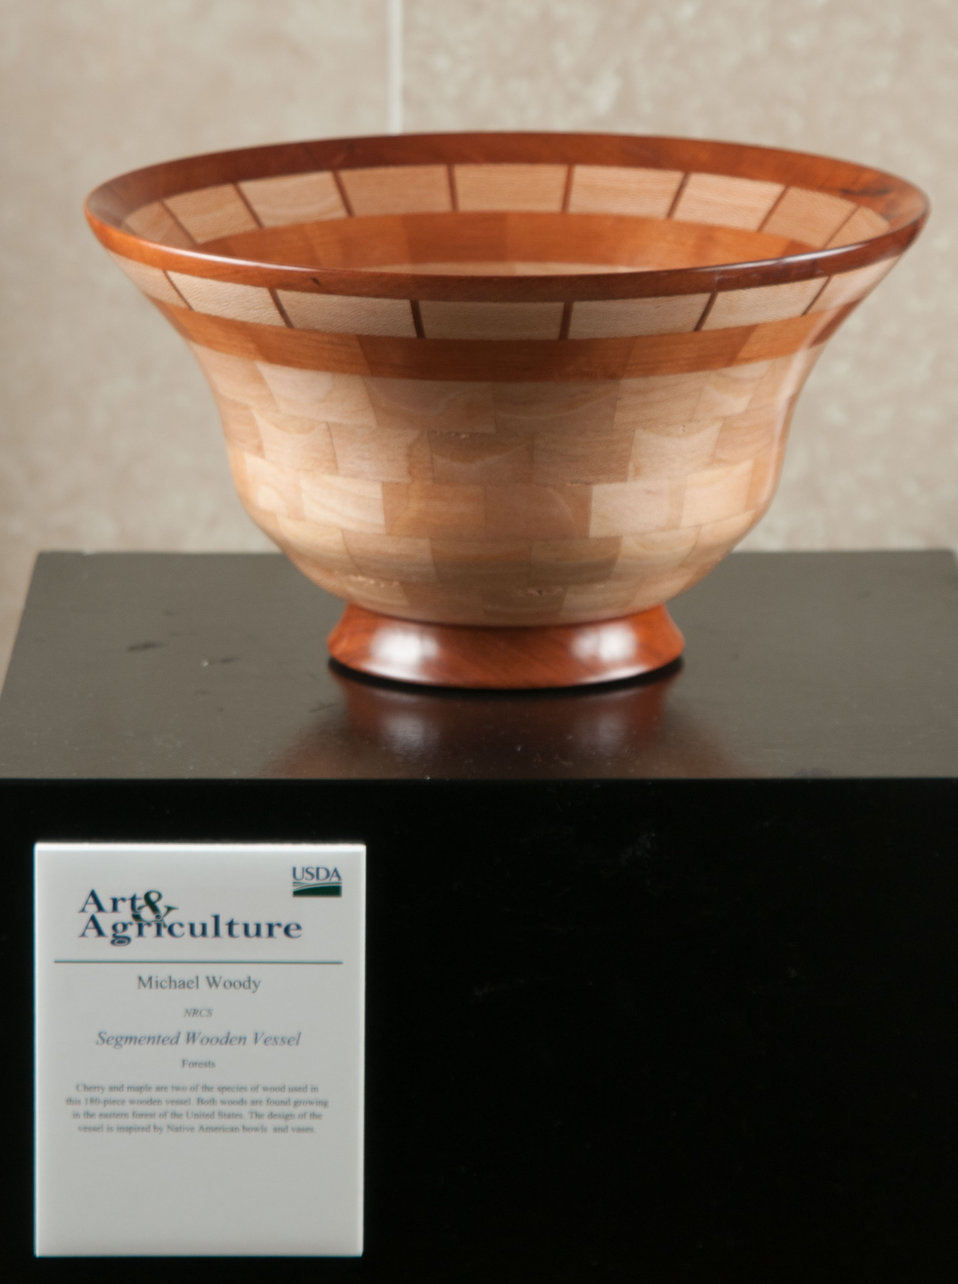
Online Viewer's Choice entries of the 2013 Art & Agriculture, Tuesday, July 9, 2013, in the South Building, Washington, D.C. Themes were expressed by employees from across the department and the contest was open to full-time and part-time USDA employees. Winning artwork will be displayed till the end of the year. U.S. Artistic expression is a creative outlet that is vital for an individual to grow and develop.